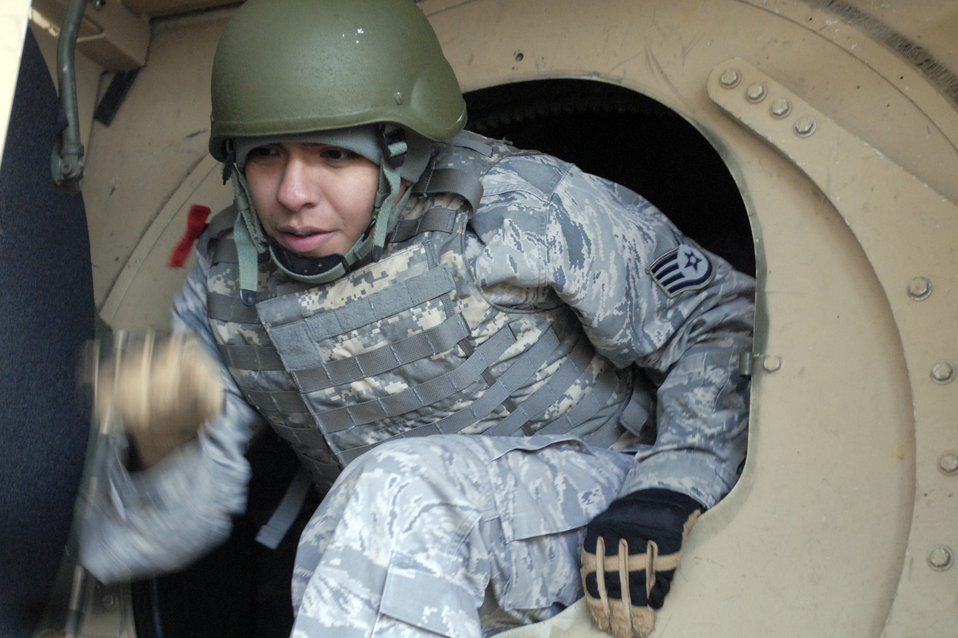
Patriot exercise teaches ISR skills to enhance situational awareness

Staff Sgt. Rene Trevino participates in Humvee egress assistance training Dec. 10, 2009 during Patriot 7, a week-long exercise using intelligence, surveillance and reconnaissance to support irregular
warfare missions at Fort Pickett, Va. After a simulated 180-degree Humvee rollover, students
scrambled to safely exit the vehicle. About 30 Air Force, joint and coalition trainees conducted integrated sensor, aircraft and counterterrorism training to learn how to make more dynamic decisions on the
battlefield. Sergeant Trevino is a 11th Security Forces Squadron desk sergeant.